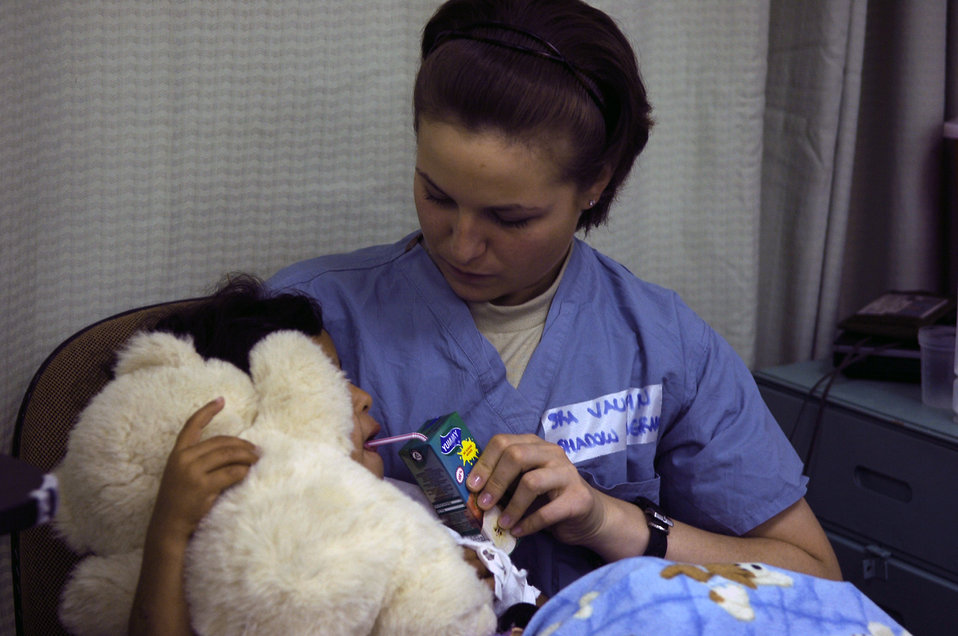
Airmen go from flight operations to the operations table

Senior Airman Nicole Vaughn spends time with a young Iraqi girl who is a patient at the Air Force Theater Hospital May 7 at Balad Air Base, Iraq. Airman Vaughn is involved in the job-swap program, which allows Airmen outside of the medical career field to spend a day shadowing hospital personnel. Airman Vaughn is assigned to the 23rd Expeditionary Fighter Squadron and deployed from Spangdahlem AB, Germany.